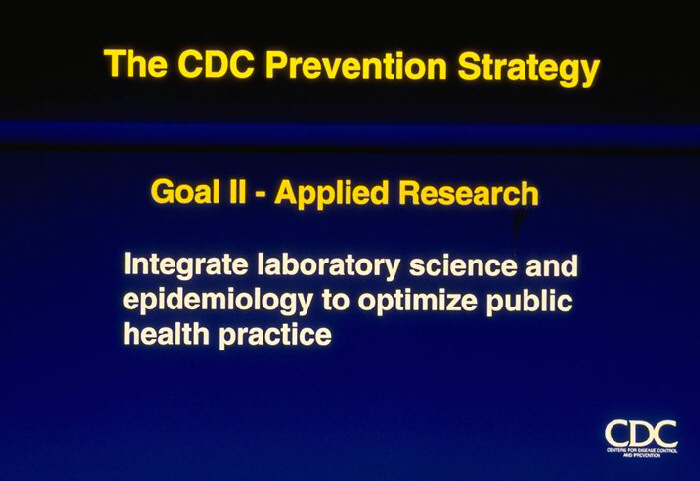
The CDC Prevention Strategy: Goal II--Applied Research (text)